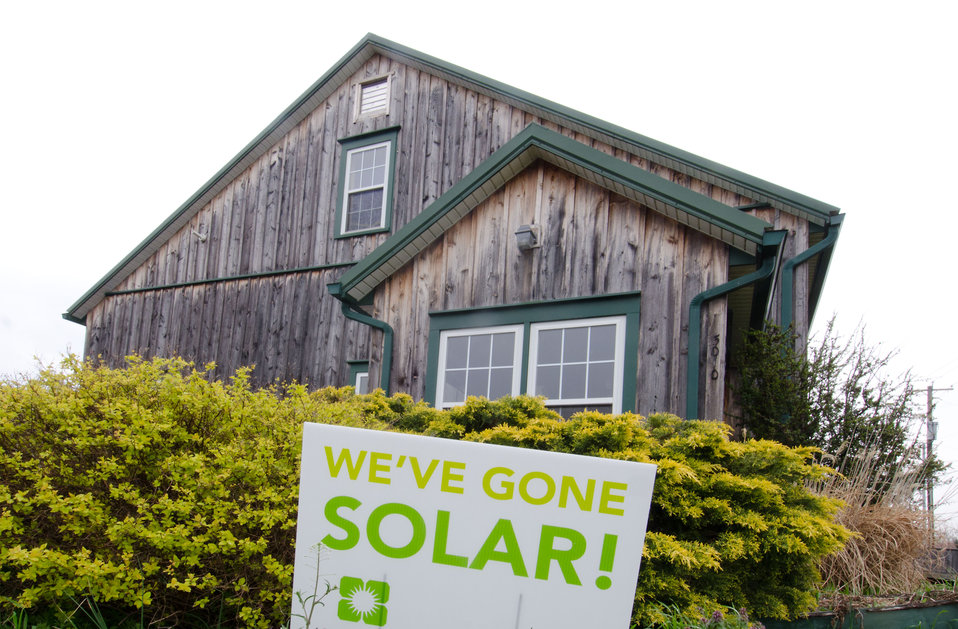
105 solar panels are installed at Littlestown Veterinary Hospital in Littlestown, PA, in mid September 2010. The Littlestown Veterinary Hospital in Littlestown, PA, received a grant from the U. S. Department of Agriculture, Rural Development under the Rural Energy for America Program (REAP) to have solar panels installed to help reduce their carbon footprint and to have cost effective electric power for the hospital. REAP provides grants for energy audits and renewable energy development assistance. The program also provides funds to agricultural producers and rural small business to purchase and install renewable energy systems and make energy efficiency improvements. The expected cost savings using solar power for the hospital’s electrical needs is expected to reduce the facility’s operating expenses by 30%-40%.